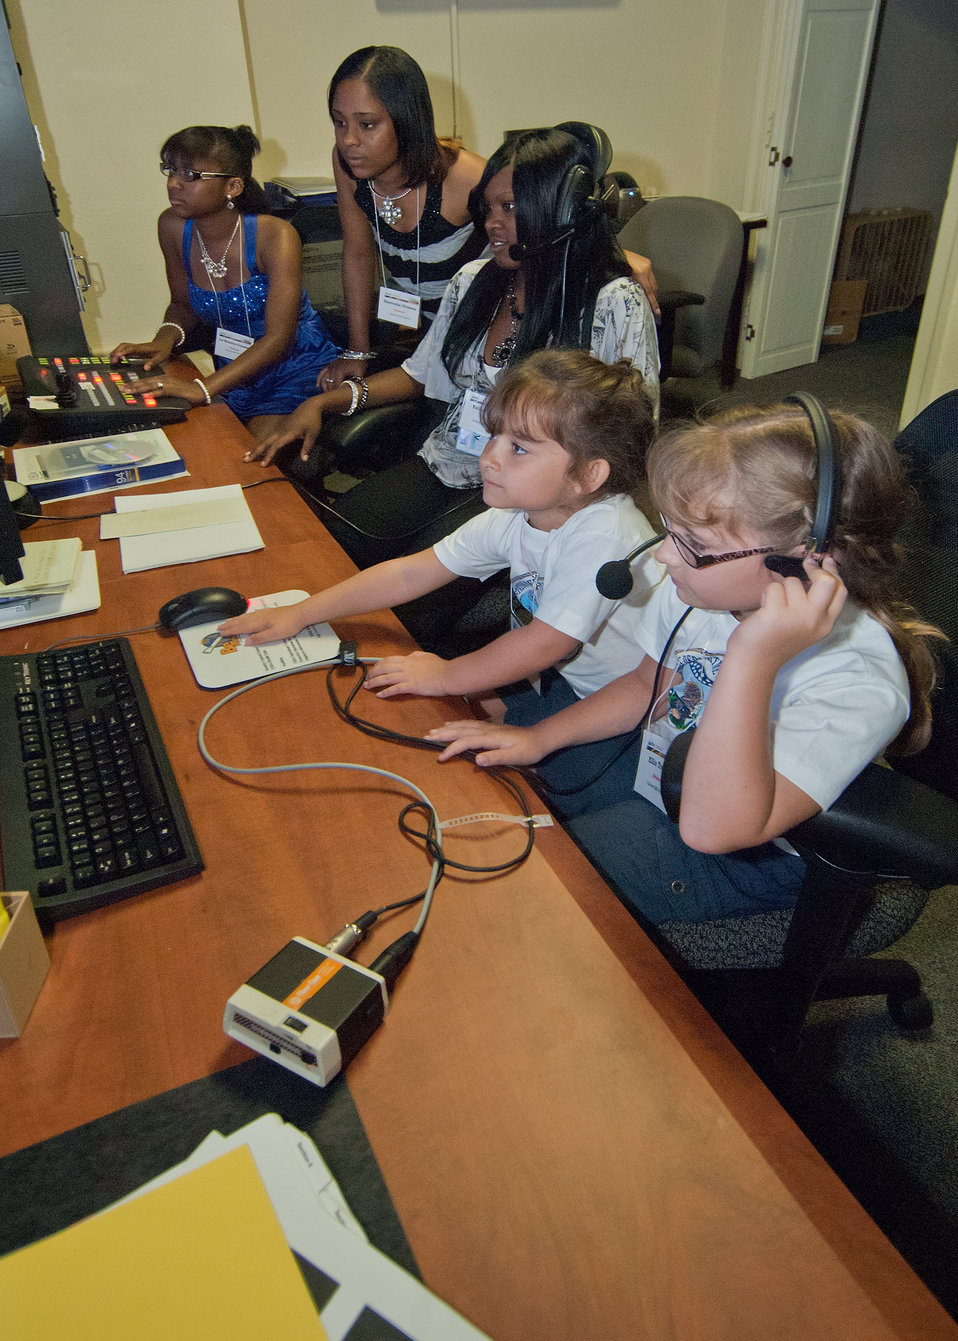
While on a Career Opportunity, seniors from Calvert High School Calvert, Texas tour the television studio United States Department of Agriculture (USDA) as part of a senior trip sponsored by the Farm Service Agency “Ag in the Classroom” program Monday, May 23, 2011, in Washington, DC. Seniors from Calvert High School Calvert, Texas (L to R) Shameka Grimes, Telisa Grimes, LaKendra Crowley and the daughters of Terry Trevino, Farm Service Agency, Farm Loan Manager Calvert, Texas Alex and Elis Trevino, work as producers and directors in the USDA Creative Media and Broadcast Center television studio.